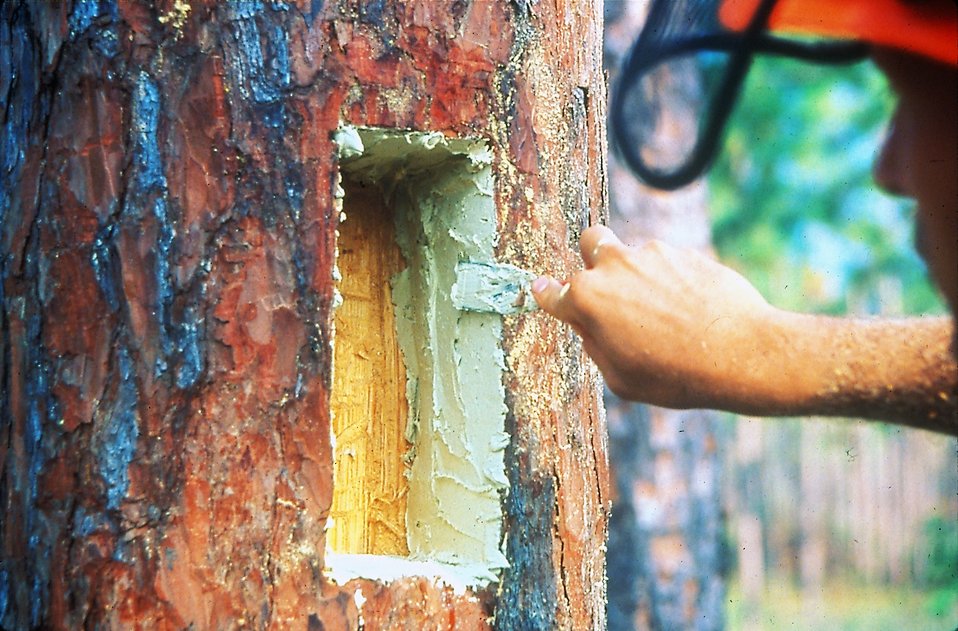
Woodpecker RCW insert

In April 2008, a crewmember on the Francis Marion National Forest prepares to install a wooden insert that will mimic the internal design of a natural nesting cavity. (Mark Danaher/U.S. Forest Service)